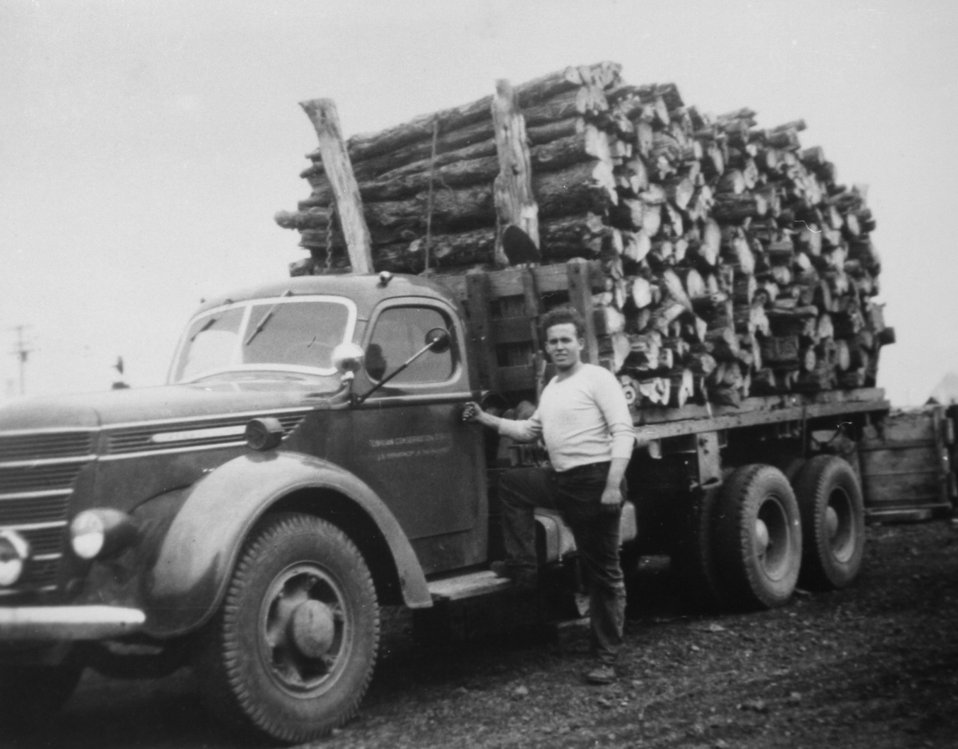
Burns CCC cap on Filmore Street. Juniper posts cut by CCC crews ready for hauling to fence work sites. circa 9140